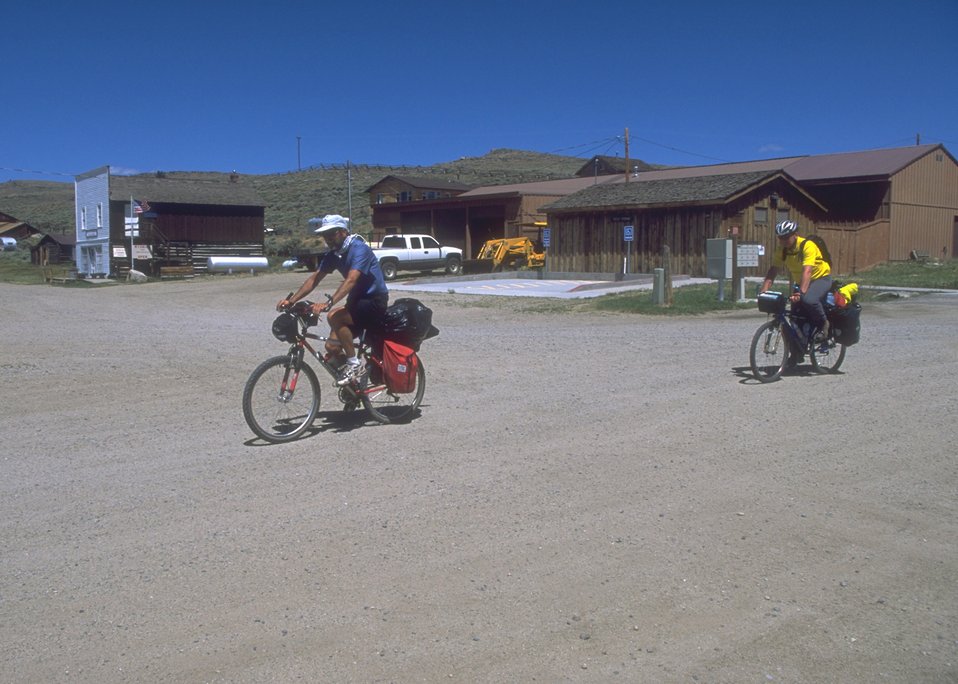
Biking the Continental Divide Trail at South Pass City, Lander Field Office.